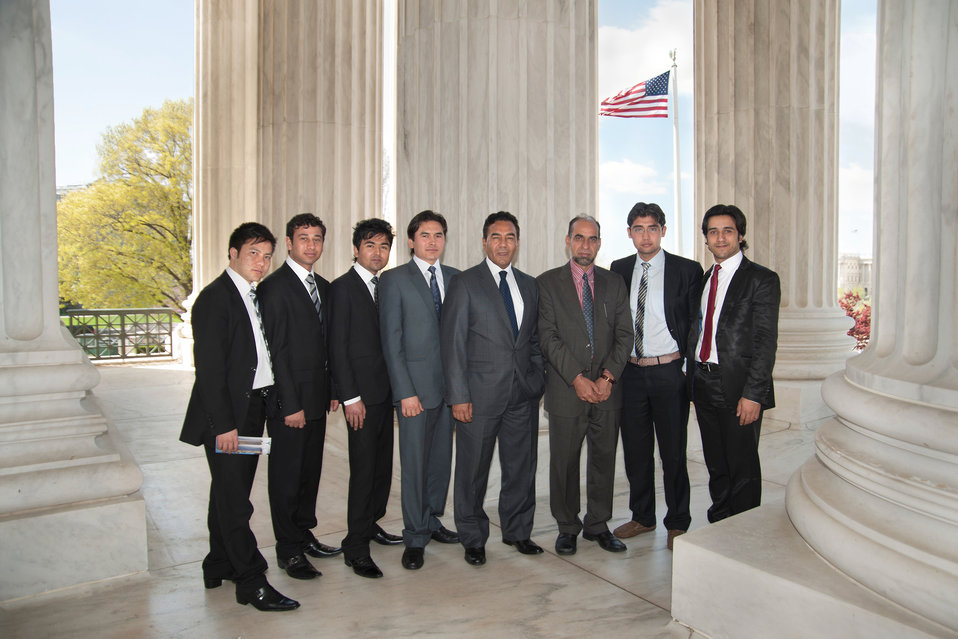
2012 Jessup Moot Court Competitors from Afghanistan Visit the Supreme Court

2012 Philip C. Jessup Moot Court Competitors from Afghanistan visit the Supreme Court of the United States in Washington, D.C., on March 29, 2012.